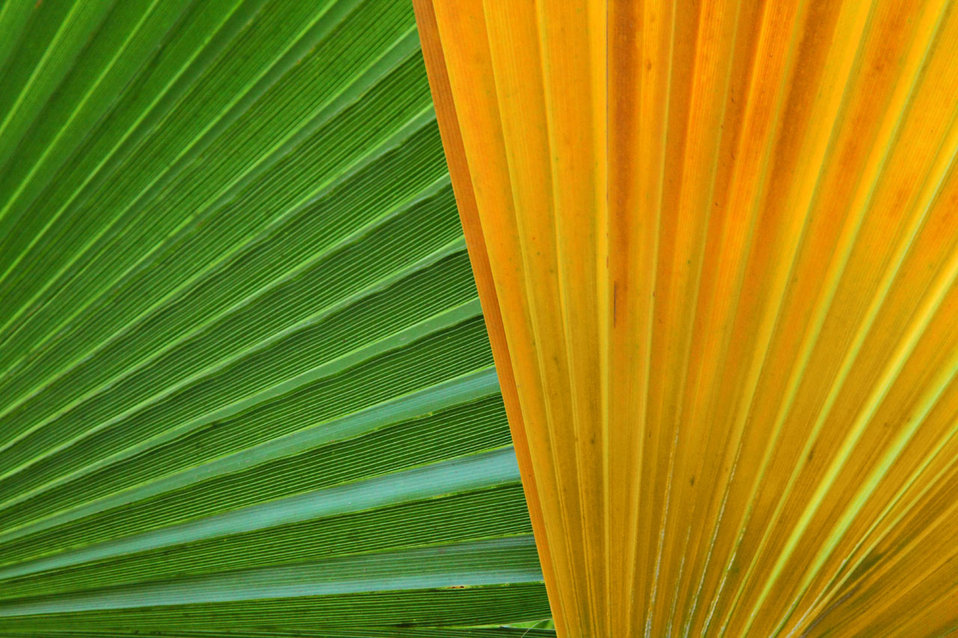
Colorful palm leaves

Green and yellow palm leaf background image.